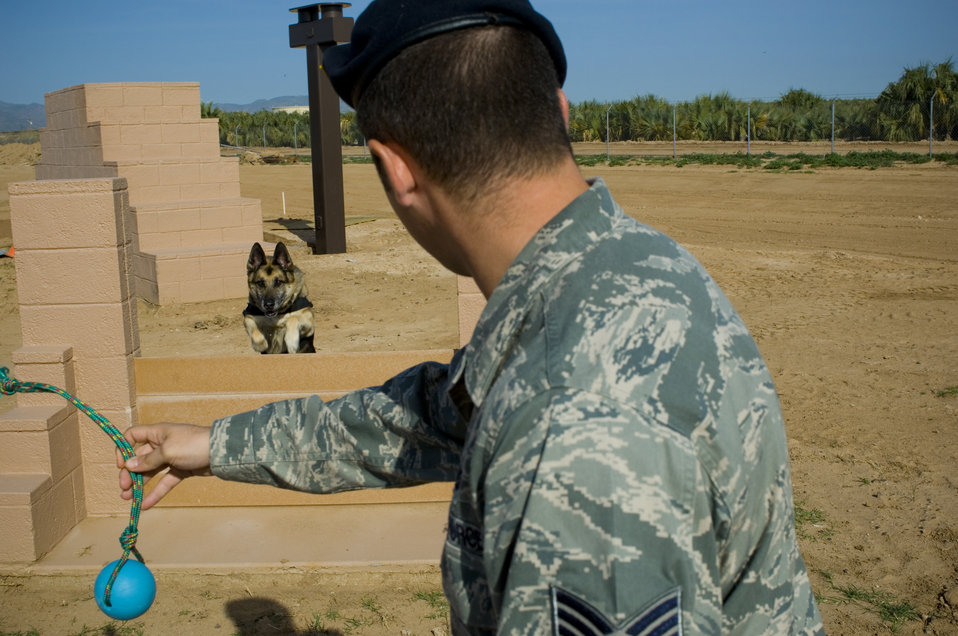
Working dogs take final run

Jampy, an 11-year-old German Shepherd military working dog, lunges over a barrier during his final run of the obstacle course at the Military Working Dog kennels at Luke Air Force Base, Ariz., March 25, 2010. Jampy has served on active duty for 10 years.